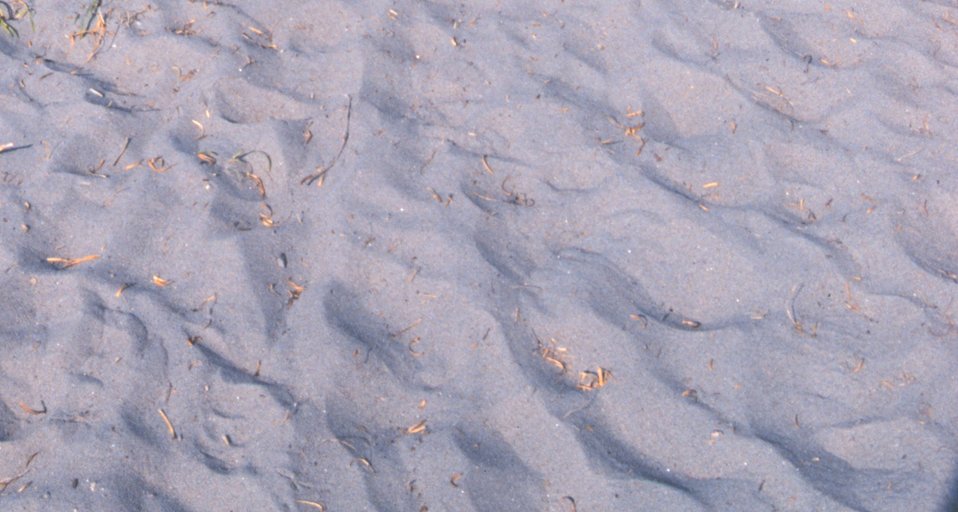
Wind-sculpted sand on a path through the dunes